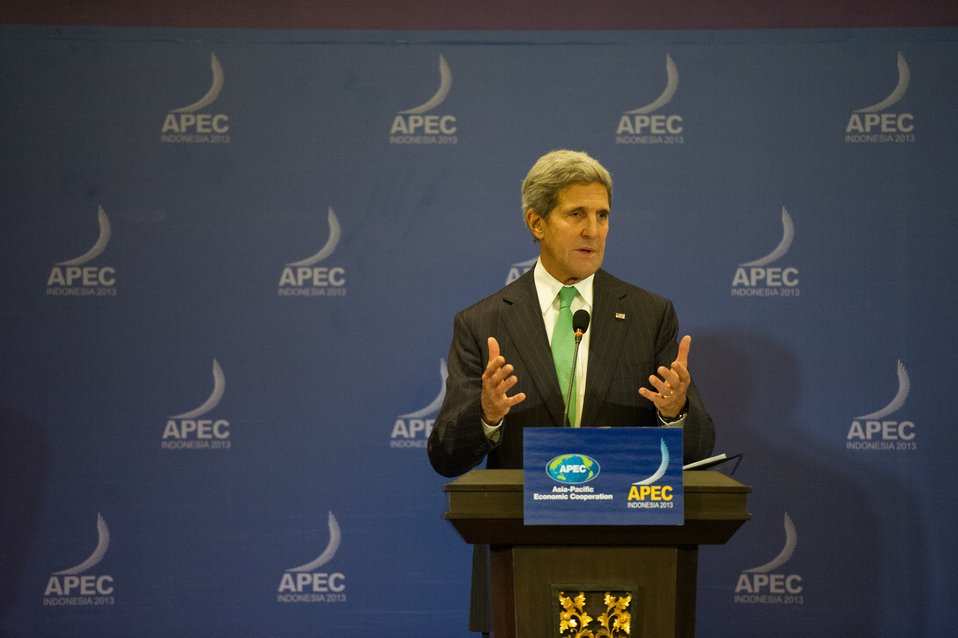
Secretary Kerry Speaks to the Press at the APEC Ministerial in Indonesia

U.S. Secretary of State John Kerry addresses the international media during a press conference he held jointly with U.S. Trade Representative Michael Froman in Bali, Indonesia on October 5, 2013.